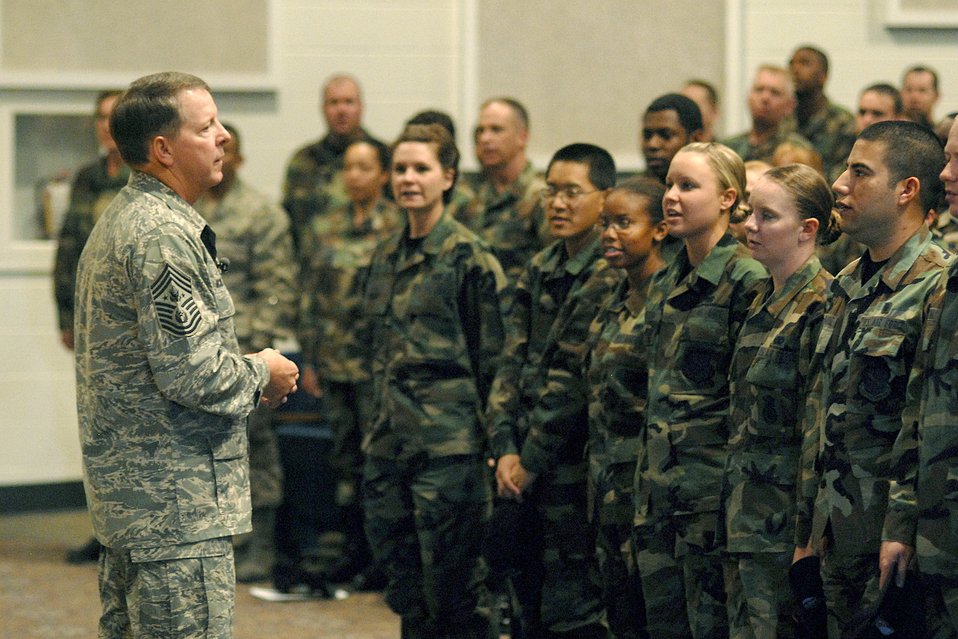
Change will ultimately benefit Airmen, says top Air Force chief

Chief Master Sergeant of the Air Force Rodney J. McKinley held an enlisted call June 6 at Peterson Air Force Base, Colo. Chief McKinley addressed the Air Force Shaping Initiative, new uniforms, training and other Air Force priorities.